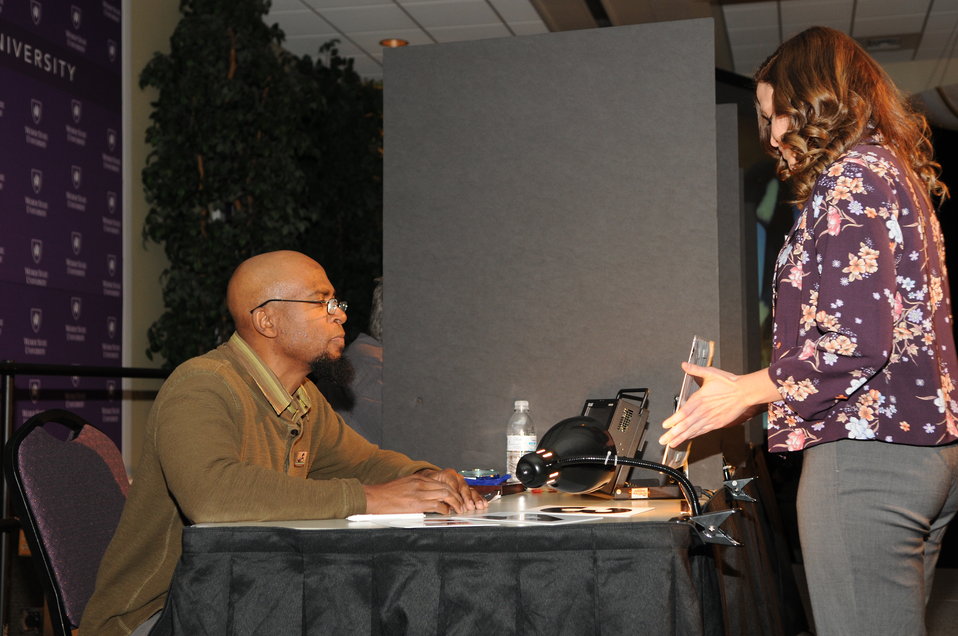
Judging

The U.S. Fish & Wildlife Service sponsored the 2012 Federal Duck Stamp Art Contest September 28 and 29 in Ogden, Utah, at Weber State University. A panel of five judges was responsible for choosing the art work used to design the 2013-2014 Migratory Bird Hunting and Conservation Stamp.